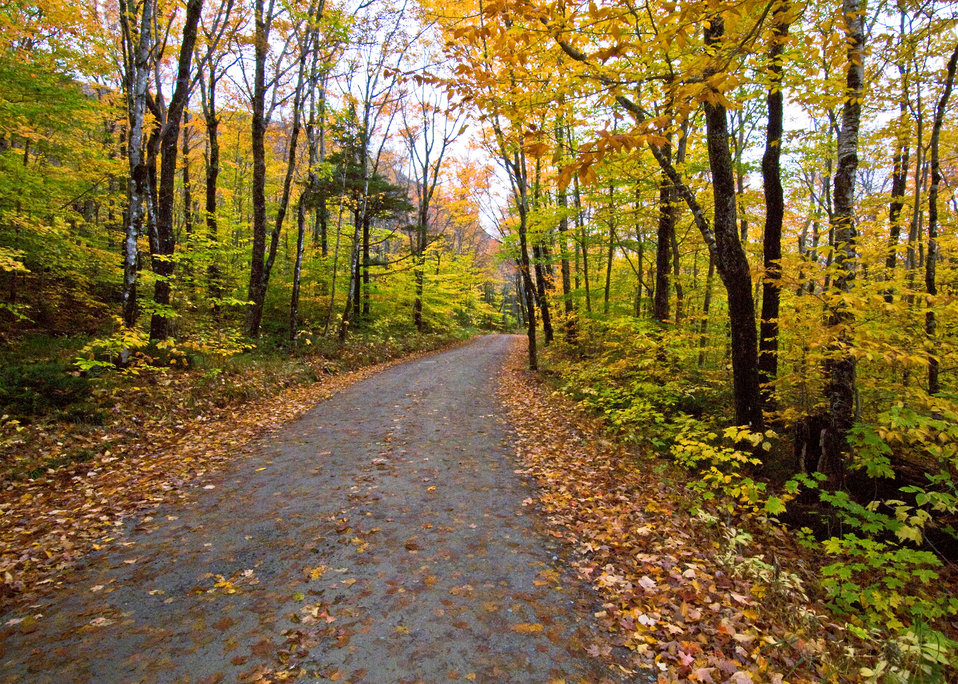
Fall is one of, or possibly the most popular season to visit the National Forests of United States . A bicycle trip, drive or hike through the White Mountain National Forest in Maine offers a vivid picturesque journey difficult to match.